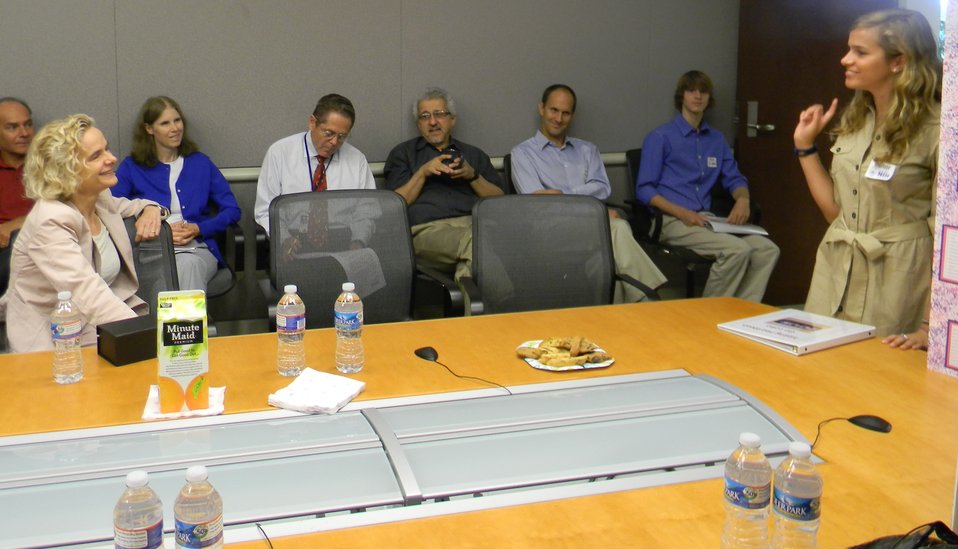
Volkow and Schumacher4

Dr. Nora Volkow (NIDA Director) and Darby Kathryn Schumacher (2nd place winner) discuss Schumacher's project